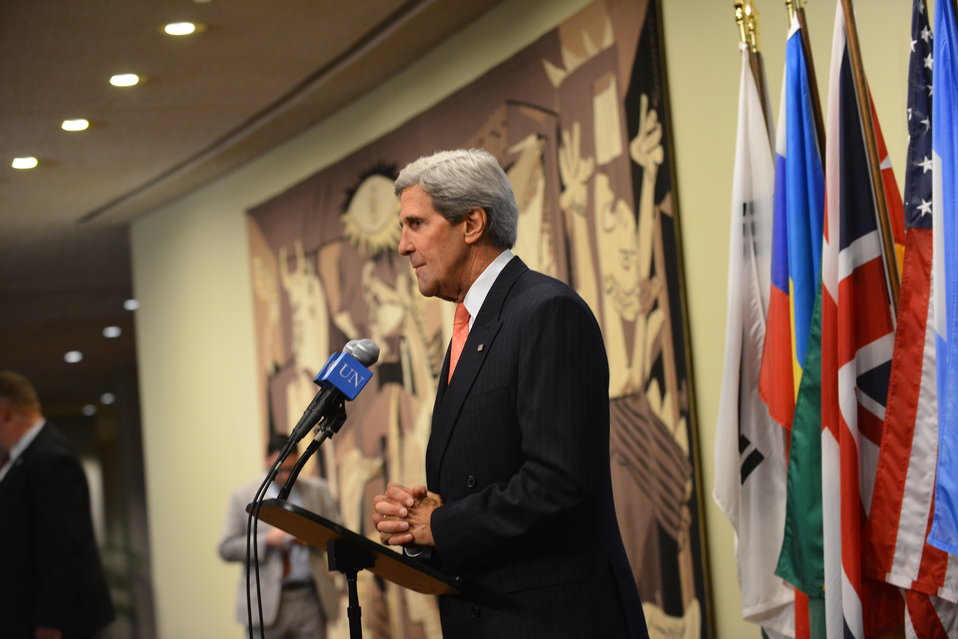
Secretary Kerry Addresses Reporters After the P5 1 Meeting on Iran

U.S. Secretary of State John Kerry addresses the press after the P5 1 Ministerial on Iran in New York City on September 26, 2013.